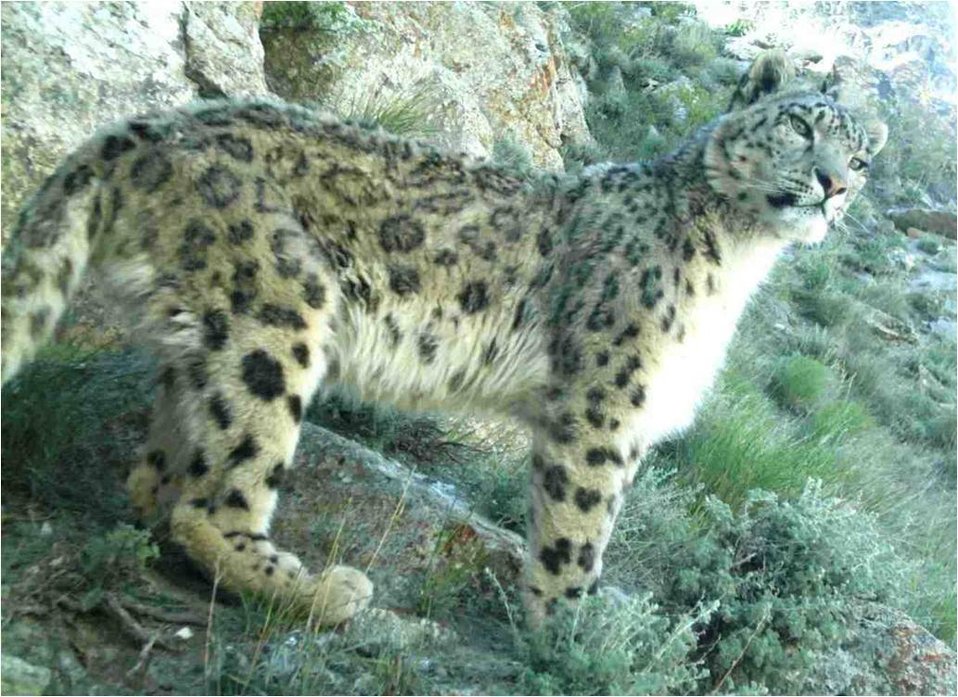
Rangers Protect Afghan Environment

Kormal, from northern Afghanistan’s Wakhan district, has always been an expert on endangered species. Just a few years ago, he was making a living for himself and his family by hunting rare snow leopards and lynx and selling their skins to fur traders.
When USAID, through its partner the Wildlife Conservation Society, began working to raise awareness about conservation in his district, Kormal’s interest was piqued and he was surprised when his village nominated him to participate in the new community conservation ranger program because he was a hunter. Nevertheless, Kormal’s knowledge of the local mountains and wildlife made him a prime candidate. Over the course of a challenging training period, he developed strong leadership skills and became a dedicated conservationist.
Rangers are essential to successful management and protection of natural resources. In a country like Afghanistan, which has suffered three decades of war and subsequent environmental degradation, the ranger program is a key to ensuring future protection of natural resources as well as the empowerment of local communities.
The USAID-supported community ranger program in Afghanistan has been developed to suit local conditions, but is modeled on international best practice. Communities recruit and select their own rangers through a transparent and competitive process. This empowers local government, generates jobs and income for rural communities, and provides a mechanism for local-level protection of resources.
Rangers form into village and community teams that are responsible for the protection and monitoring of natural resources and rangelands in their localities. Rangers who show particular skill and interest – such as Kormal – are identified and used as instructors to train newly recruited personnel.
Kormal hasn’t totally changed – he still traps snow leopards and other endangered species, but, now he uses a camera, thereby helping to protect endangered species and preserve Afghanistan’s biodiversity.